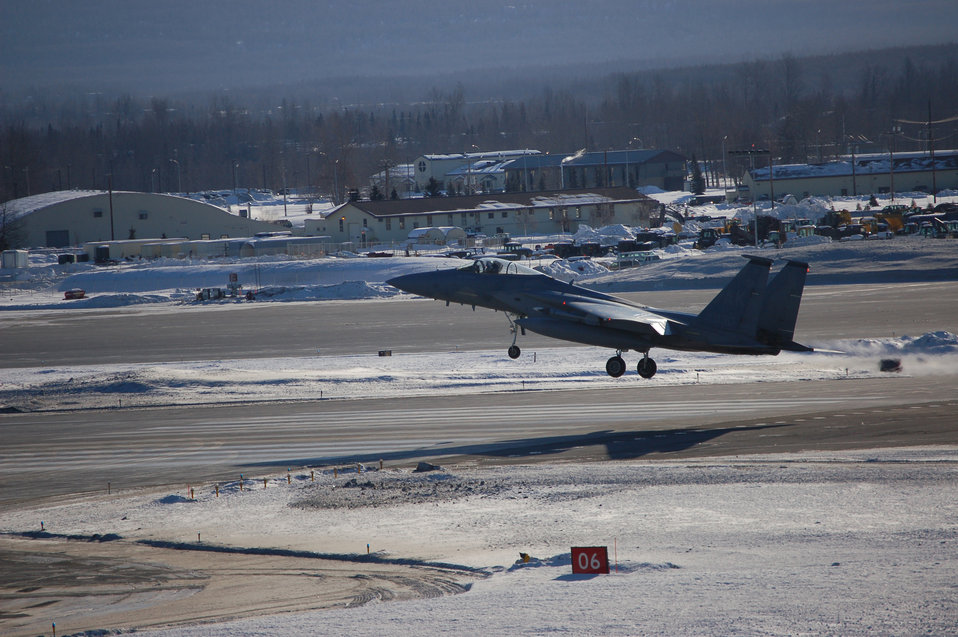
An F-15E Strike Eagle touches down on the flightline at Elmendorf Air Force Base, Alaska, Feb. 21 after a training mission. The F-15Es are only one part of the base's capabilities that support operations in Air Force Pacific Command. The fighter is with the 90th Fighter Squadron.